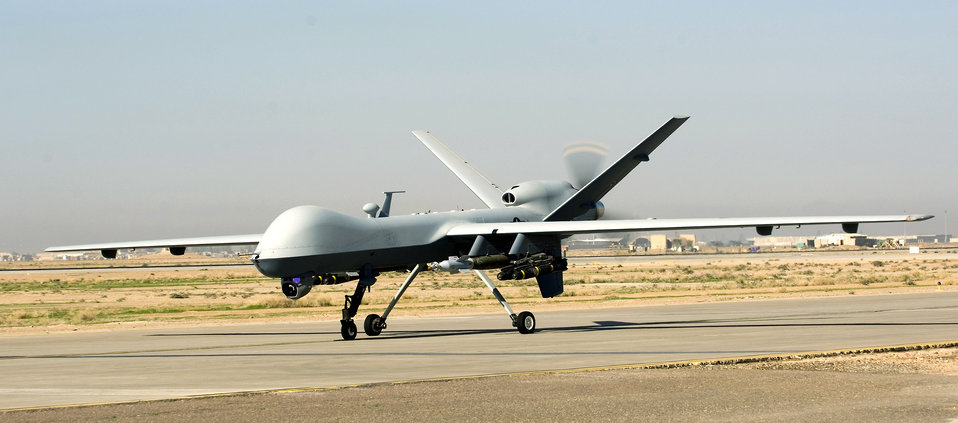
UAVs return from successful missions

An MQ-9 Reaper unmanned aerial vehicle taxies after landing at Joint Base Balad, Iraq, Nov. 10. Reapers are remotely piloted and can linger over battlefields, providing persistent strike capabilities to ground force commanders. This Reaper is deployed to the 46th Expeditionary Reconnaissance and Attack Squadron from Creech Air Force Base, Nev.